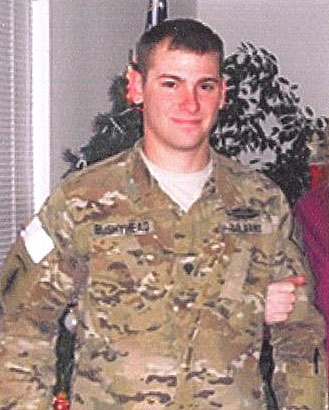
Alex Bushyhead, from Skiatook, Oklahoma, is a Corporal in the Army National Guard. He lives with his wife and 2-year-old daughter on a small farm in Chelsea, Oklahoma. Bushyhead joined the Army in 2008 as an infantry man. He attended sniper school in 2010 and was deployed to Afghanistan in 2011. While on a mission he tore ligaments in his knee. He is currently part of the Community Based Warrior Transition Unit (BWTU) in the Operation Warfighter program. He is working for the Service in the Oklahoma Ecological Services field Office in Tulsa, Oklahoma.